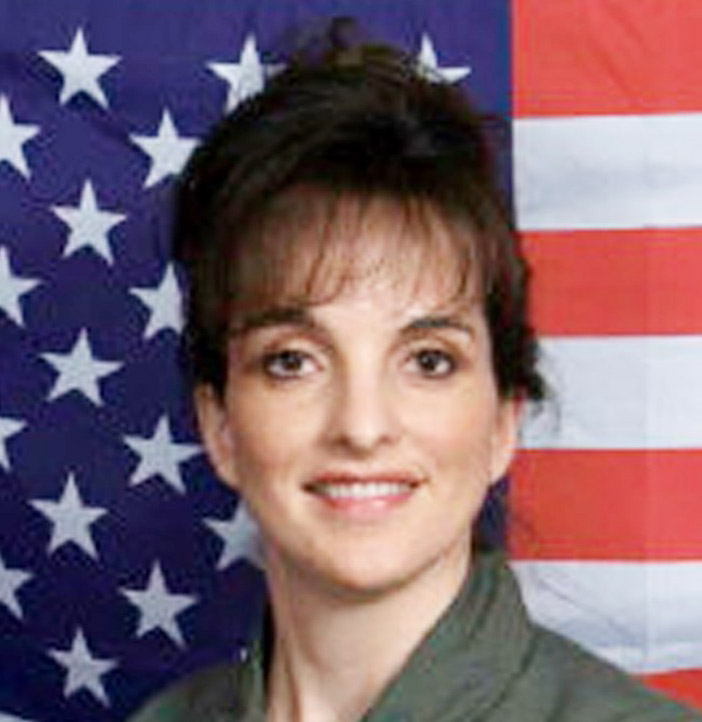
Nurse Dotson missing

First Lt. Nonnie Dotson, a clinical nurse in the 759th Surgical Operations Squadron at Wilford Hall Medical Center, Lackland Air Force Base, Texas was reported missing Nov. 20 by relatives in Colorado. The Jefferson County Sheriff's Department is conducting an investigation into her disappearance. Her duty status is currently listed as